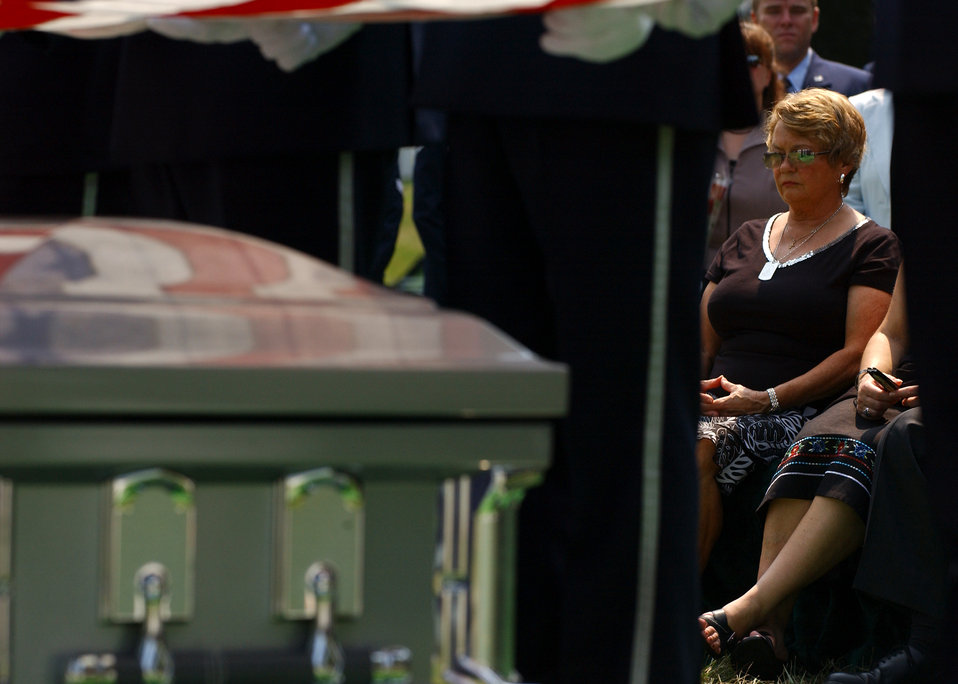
Group Burial

ARLINGTON NATIONAL CEMETERY, Va. -- Linda Crate, mother of Staff Sgt. Casey Crate, reflects during the Aug. 11 funeral held here for her son and three other U.S. Airmen and an Iraqi Airman who died May 30 in an aircraft accident in Iraq.